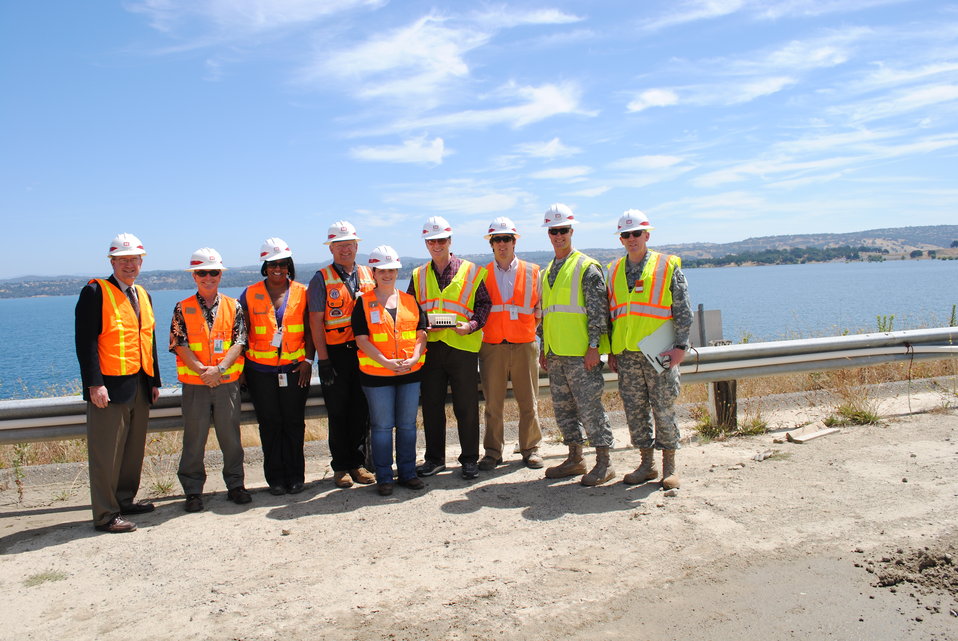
Congressman Dan Lungren, Col. Mike Wehr with Folsom Dam Joint Federal Project team members

Congressman Dan Lungren and Col. Mike Wehr along with the U.S. Army Corps of Engineers Sacramento District's Folsom Dam Joint Federal Project team members Aug. 12, 2011.